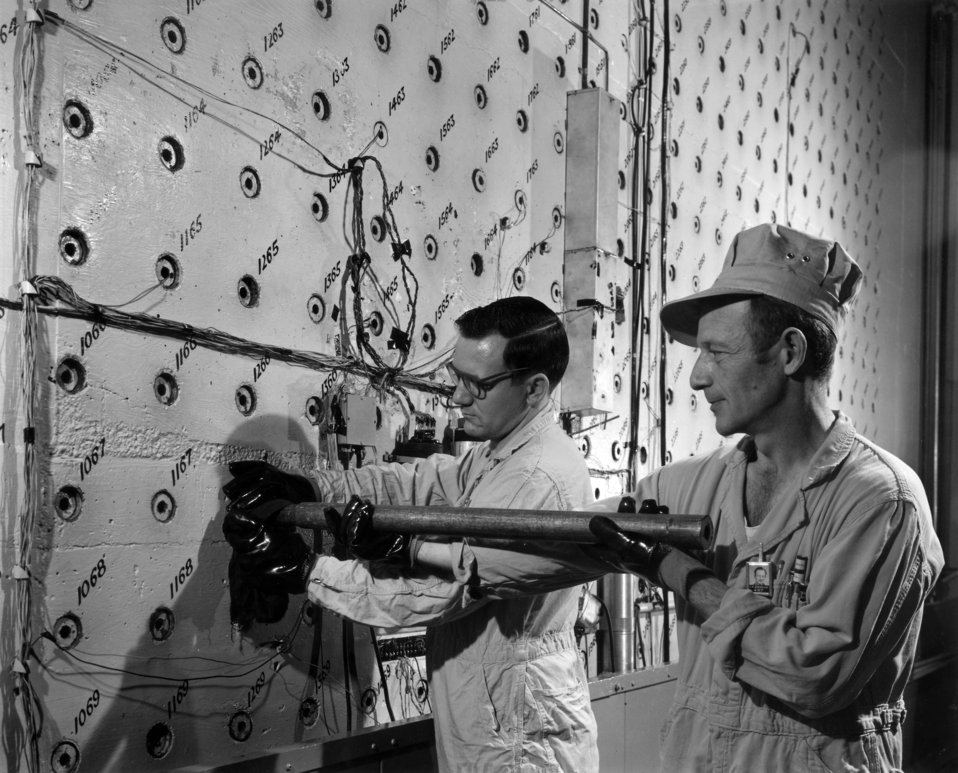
Loading Face Graphite Reactor ORNL

7577 DOE photo Ed Westcott 1-2-1952 Oak Ridge Tennessee